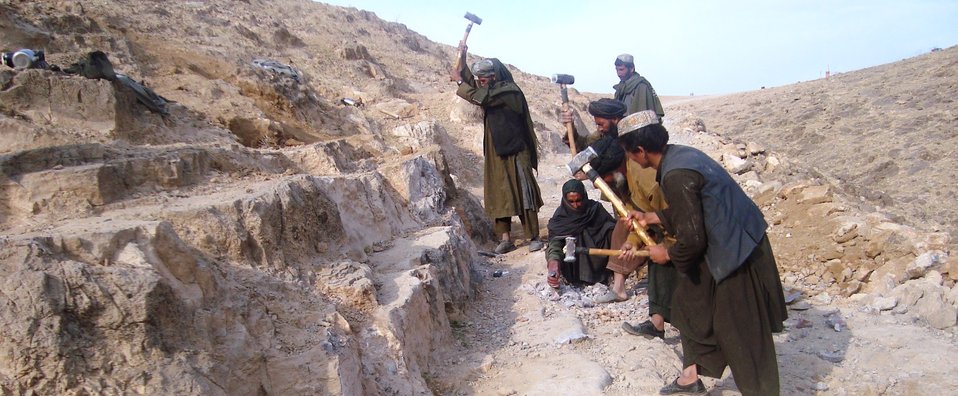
Widening the Road